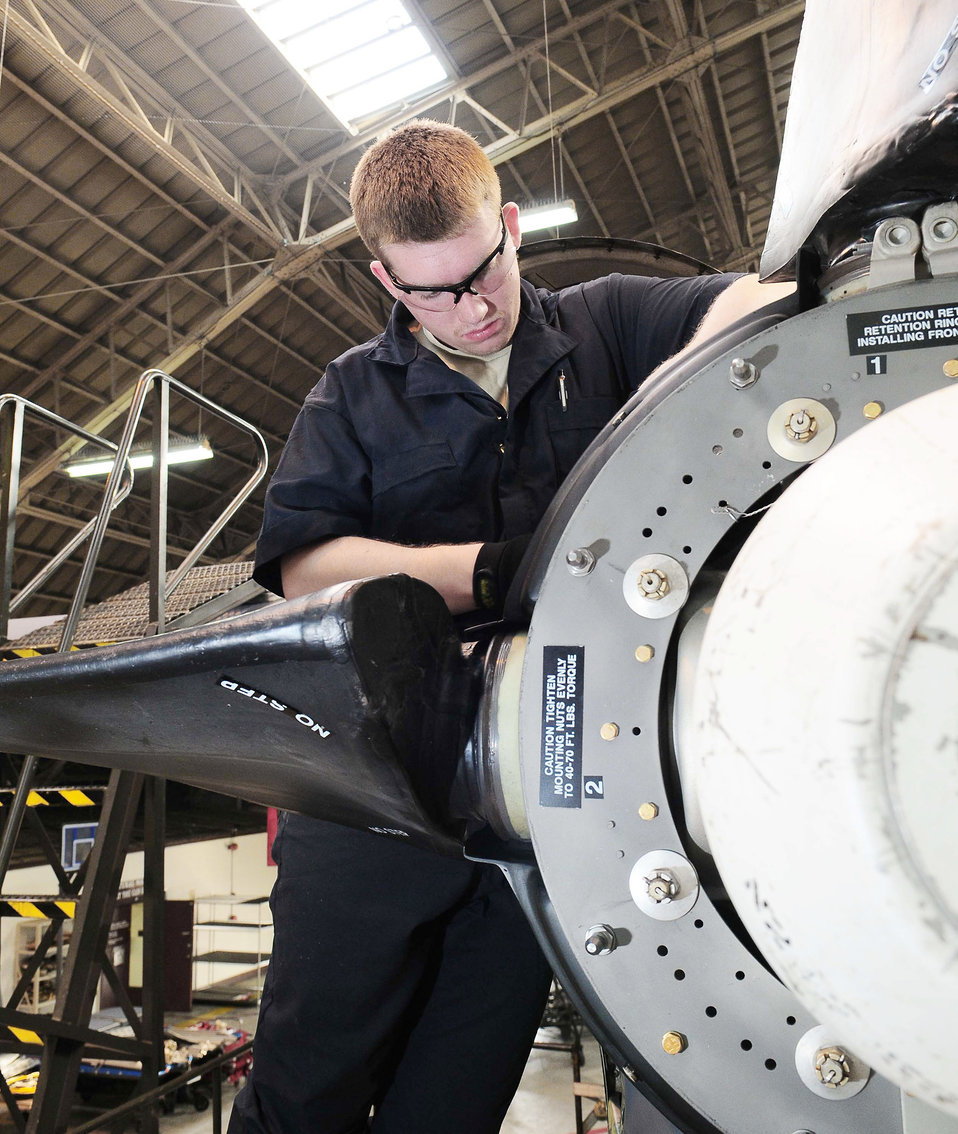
Yokota maintainers use AFSO21 to improve C-130 inspection process

Airman 1st Class Garrick Kanen replaces a brush block on the engine of a C-130 Hercules March 16, 2010, at Yokota Air Base, Japan. Each plane undergoes an isochronal inspection that consists of a 14-day detailed inspection before the plane is ready for re-launch. Airman Kanen is assigned to the 374th Maintenance Squadron.